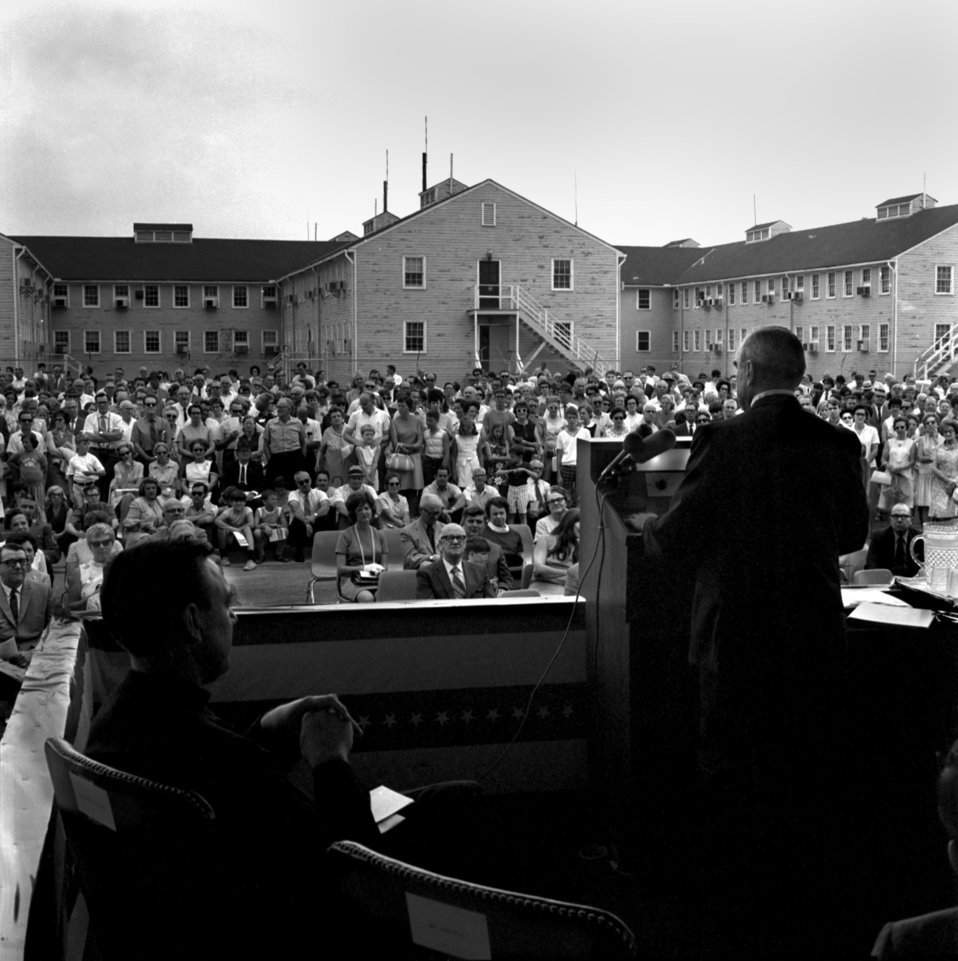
Formal Dedication New AEC (Atomic Energy Commision) - FOB (Federal Office Building) Oak Ridge

70-165g DOE Photo by Frank Hoffman Formal Dedication New AEC (Atomic Energy Commision) - FOB (Federal Office Building) Oak Ridge Tennessee 6-27-1970